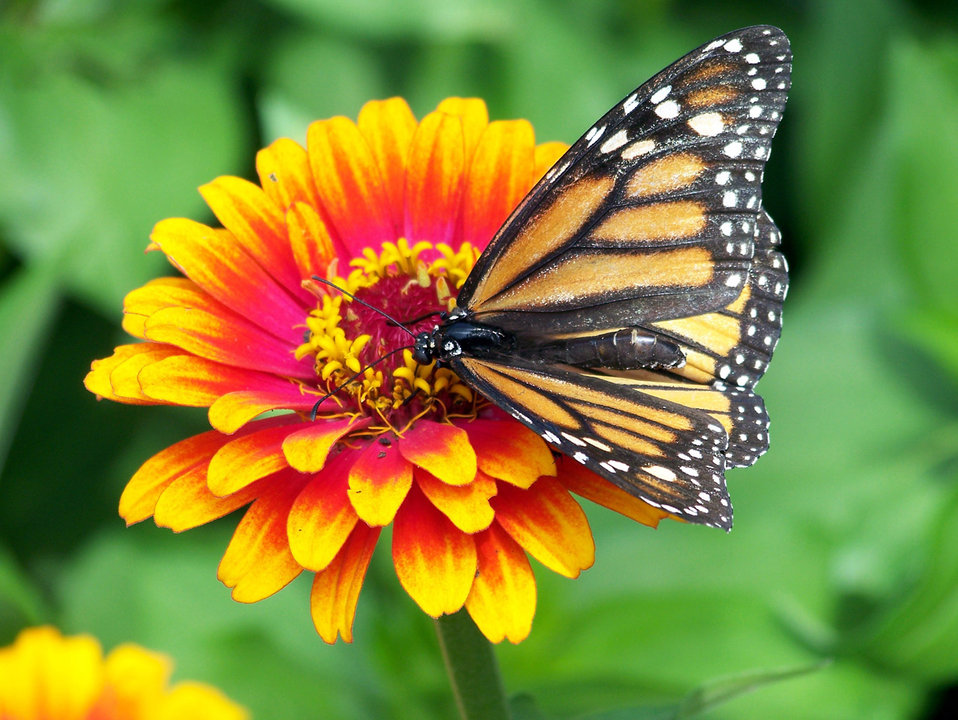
Monarch butterfly on flower

A monarch butterfly on a flower.